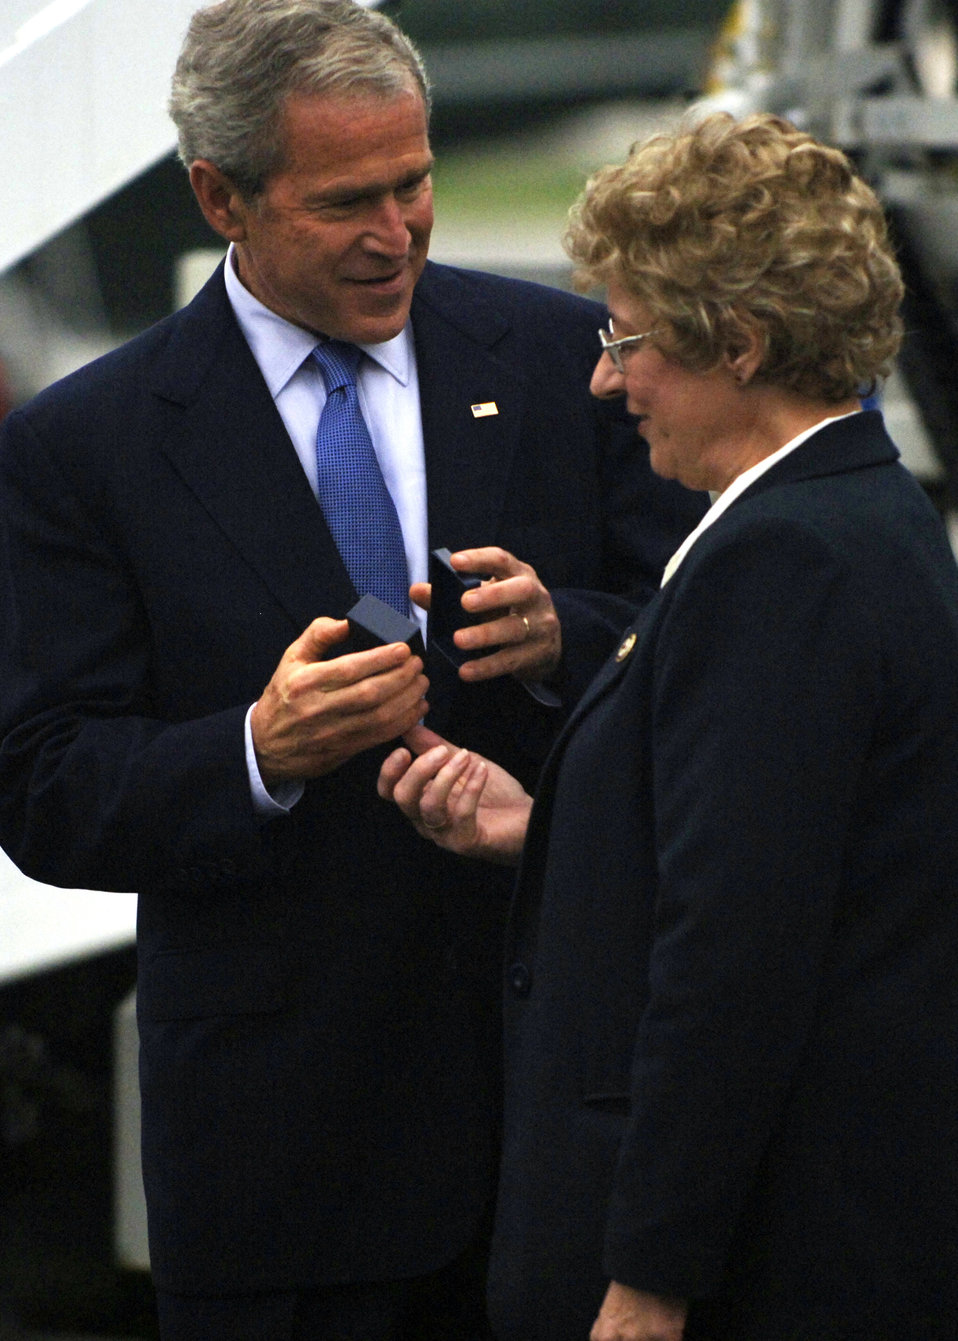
President meets with Airmen, families during S.C. visit

President George Bush presents the President's Volunteer Service Award to Eileen Hadbavny on the Charleston Air Force Base, S.C., flightline Oct. 10. Ms. Hadbavny is with the American Red Cross and is a former member of the 315th Airlift Wing here. President Bush met with more than 250 Team Charleston members en route to an event at Kiawah Island, S.C.